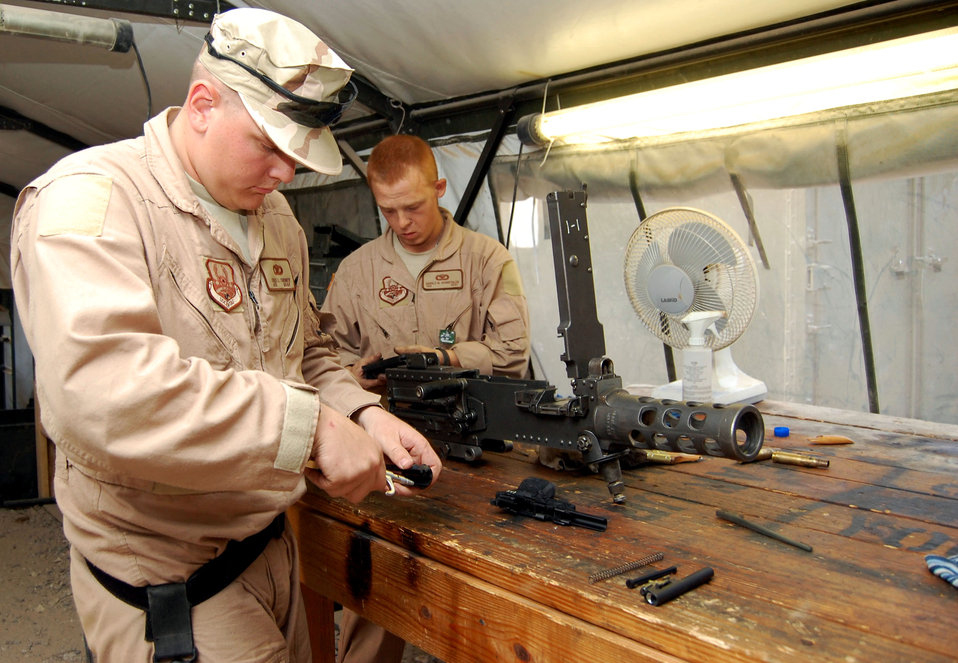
Convoy preparations

Airman 1st Class Cole Turner and Senior Airman Harold Houghtalen clean an M-9 pistol and an M-2 heavy machine gun before a convoy mission Nov. 12 at Camp Bucca, Iraq. The two are 887th Expeditionary Security Forces Cobra Squad fire team members. Airman Houghtalen is from Moody Air Force Base, Ga., and Airman Turner is from Barksdale AFB, La.